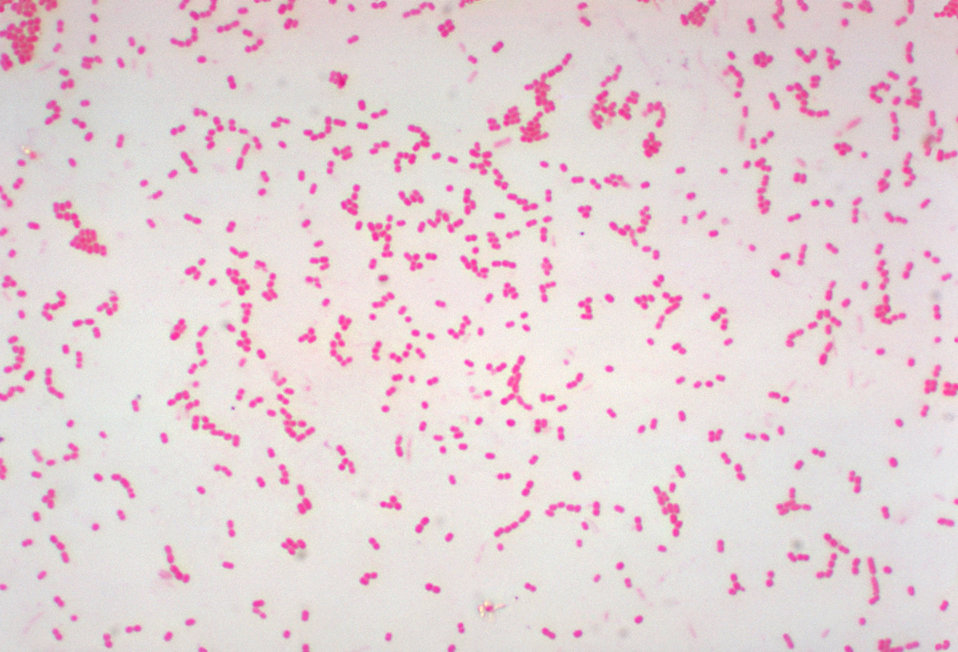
This Gram-stained photomicrograph depicts numerous Gram-negative Acinetobacter calcoaceticus bacterium.